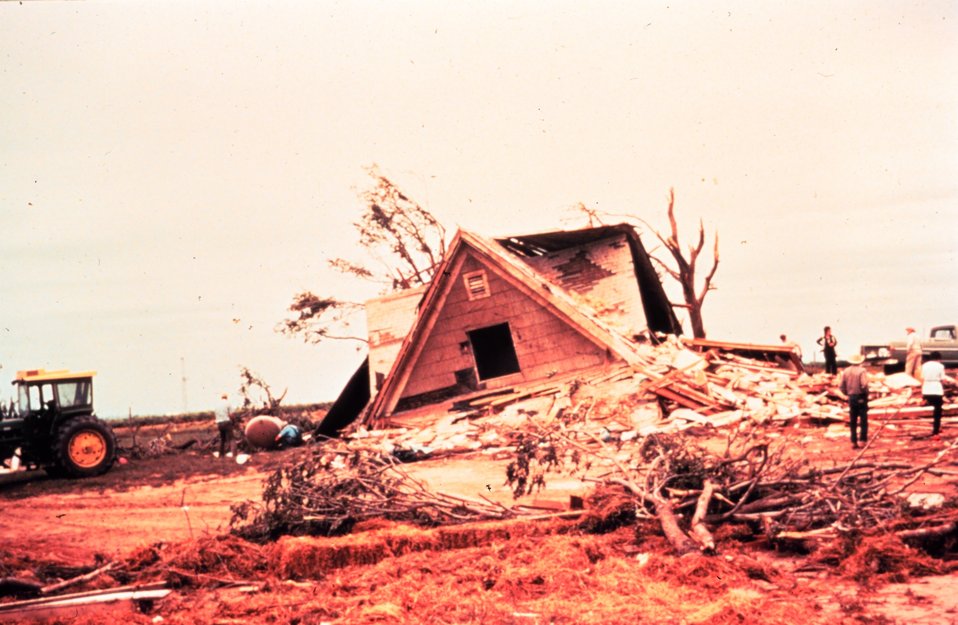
Neighbors and friends work to remove debris around remains of a farmhouse. Large tornado devastated area.